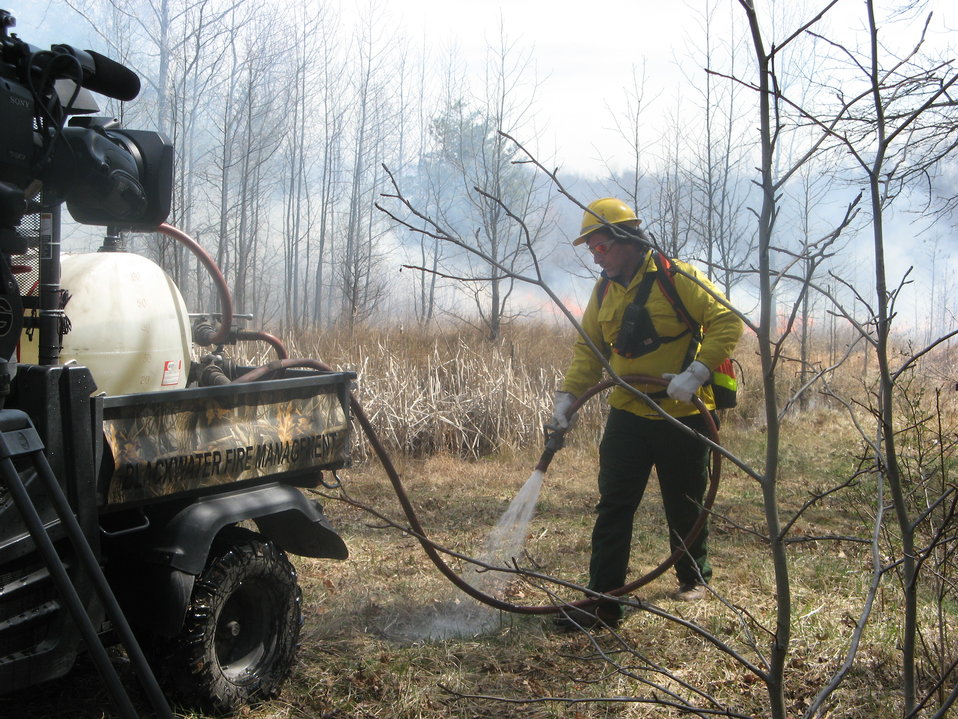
Wetting the line

Laurel, MD: A firefighter hoses down the perimeter of a controlled burn to keep the fire within established lines at Patuxent National Research Refuge.